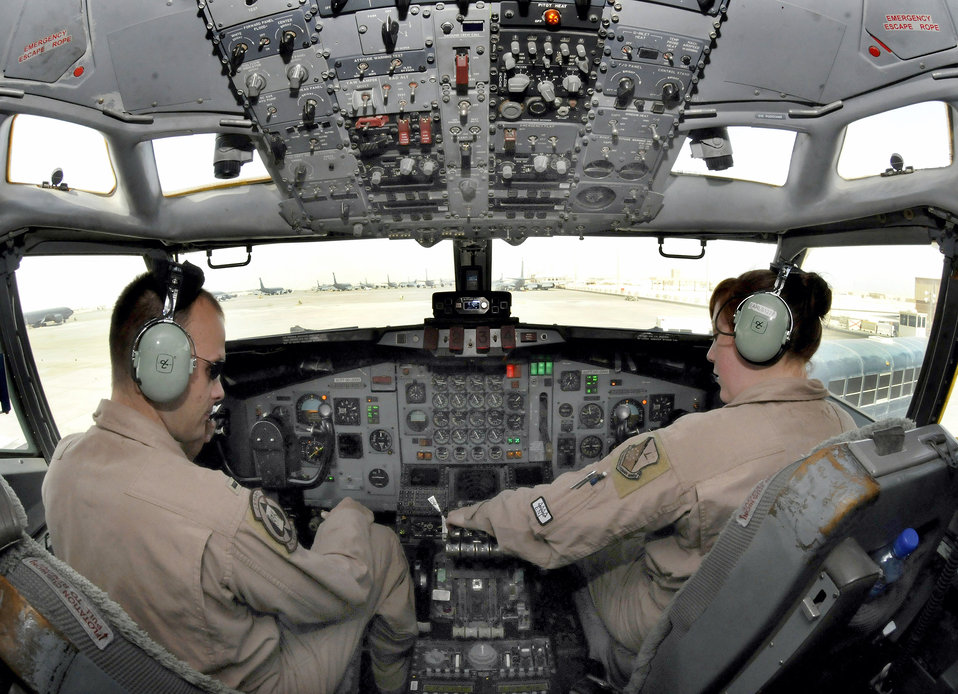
Airmen in sky give warriors on ground situational awareness

1st Lt. Seth Simpson and Staff Sgt. Jessica Earls perform preflight procedures in the cockpit of the E-8C Joint STARS Jan. 7 at an air base in Southwest Asia. Lieutenant Simpson is a co-pilot assigned to the 7th Expeditionary Airborne Command and Control Squadron and Sergeant Earl is a flight engineer assigned to the 7th EACCS. They are deployed from Robbins Air Force Base, Ga.